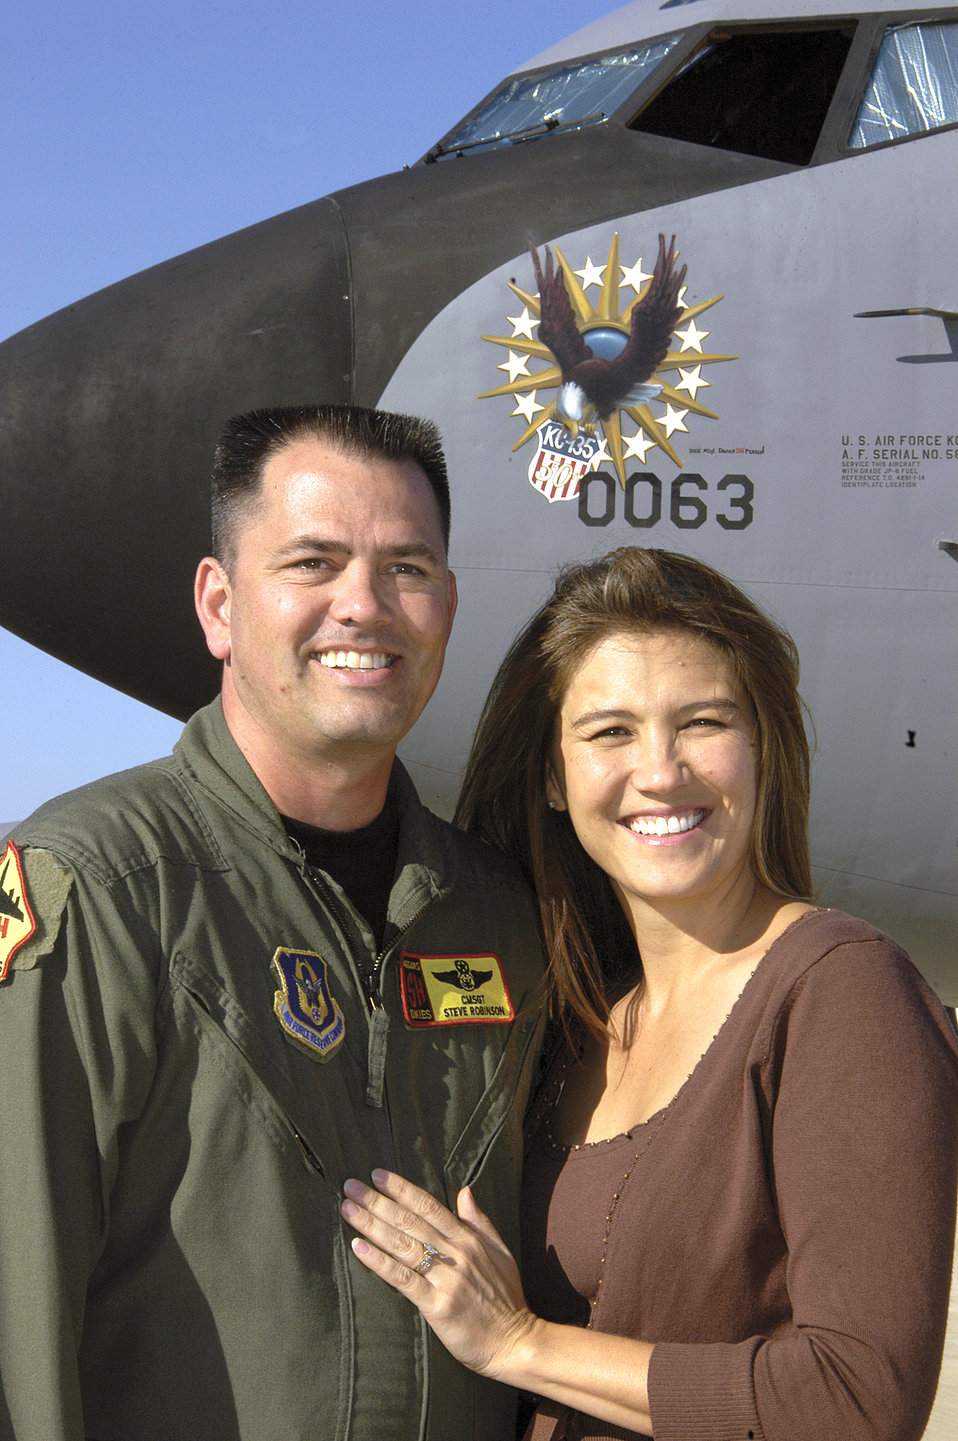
Airman celebrates different KC-135 anniversary

Chief Master Sgt. Steven Robinson and his wife Justine said